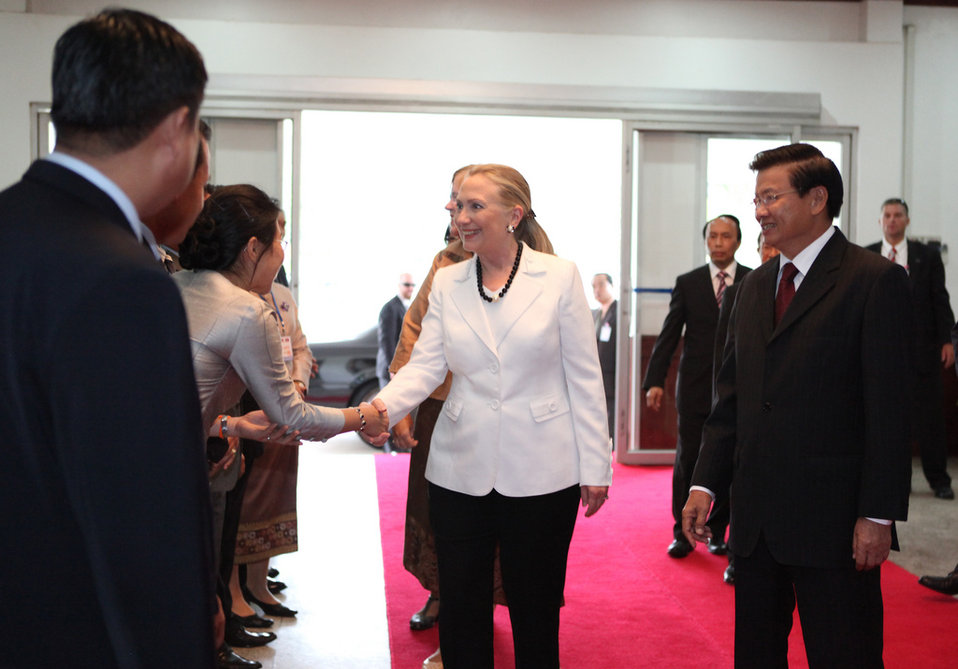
Secretary Clinton Clinton Is Greeted in Laos

U.S. Secretary of State Hillary Rodham Clinton is greeted by local Lao upon her arrival in Vientiane, Laos, on July 11, 2012.